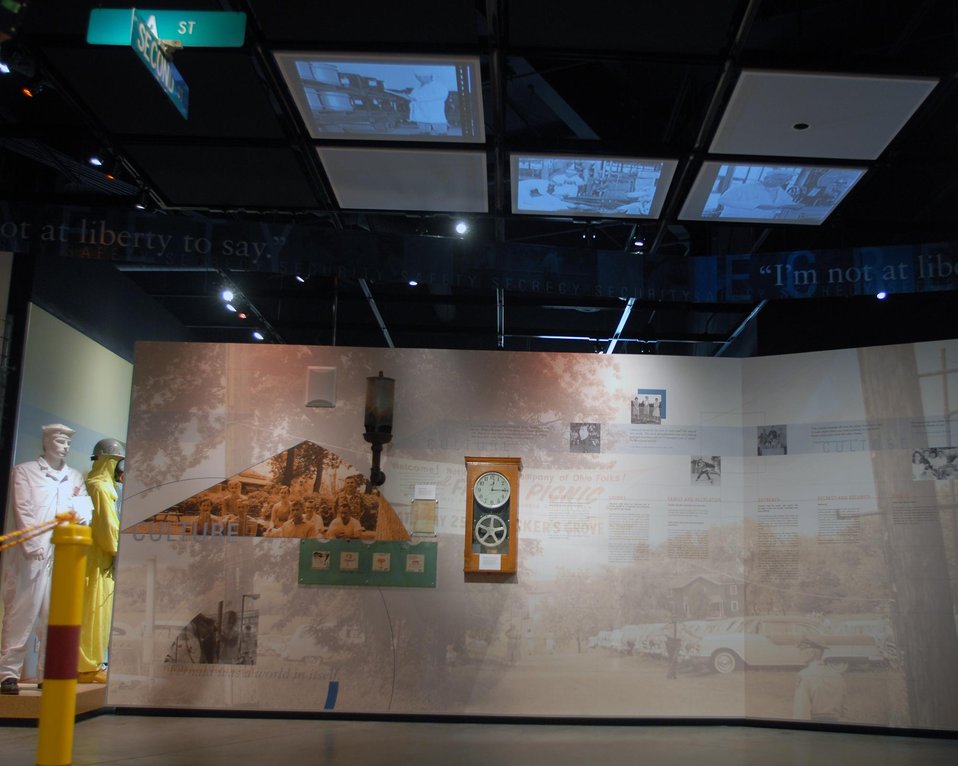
The various media at the Fernald Preserve Visitor Center convey to visitors the production-era work that took place at the Fernald Complex.